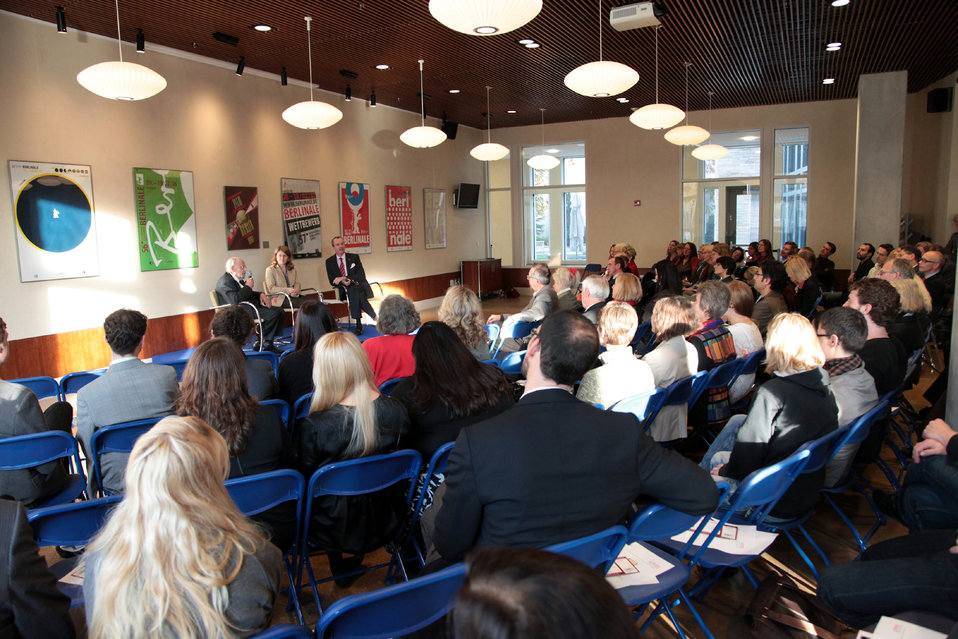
Toby Rodes Speaks at Embassy Berlin

Toby Rodes, former Chief of Public Relations for the Marshall Plan and co-founder of the Berlin film festival, discusses his work to re-construct the media landscape in Germany after the devastation of World War II while at the U.S. Embassy in Berlin, Germany, on October 29, 2010.